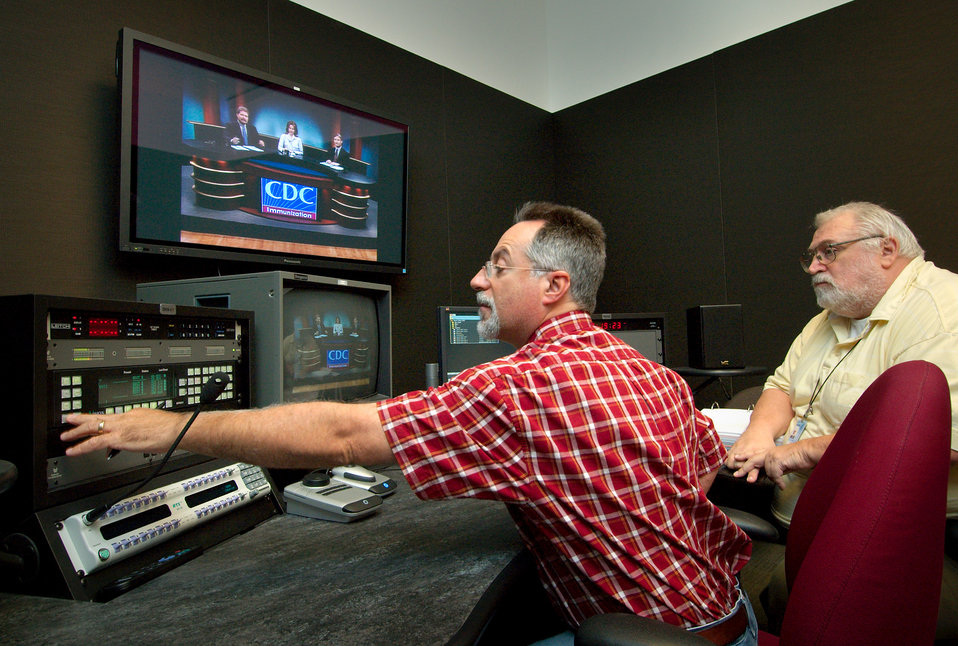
This 2005 photograph shows Centers for Disease Control's Senior Editor/Technical Director, Lee Bookman (front), and Editor/Director, Ron Bartlett, as they were working in one of the broadcasting edit suites of the Global Communications Center, otherwise known as Building 19.